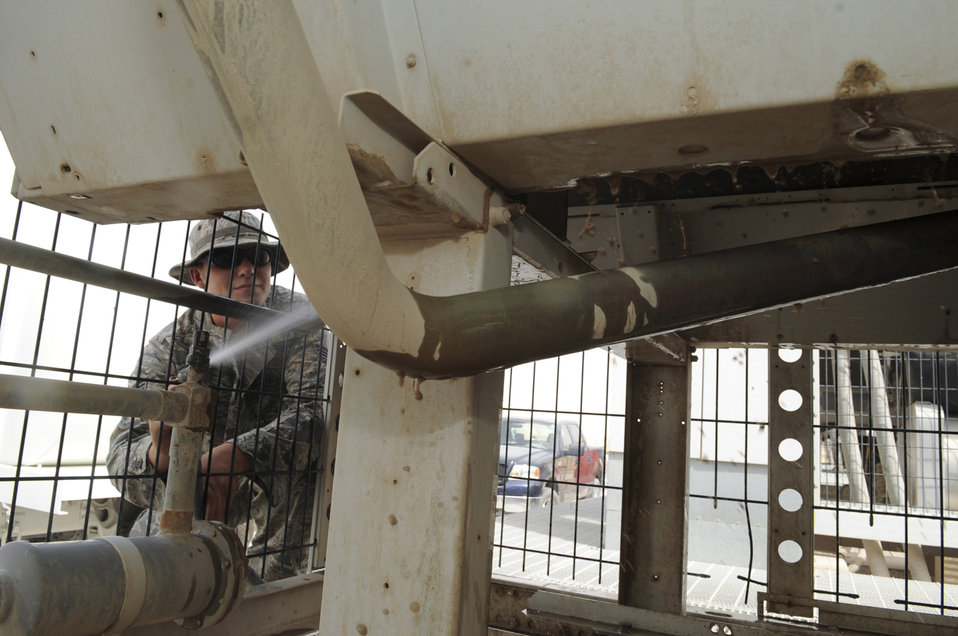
HVAC cooling them down

Senior Airman Domenic Trolla, 379th Expeditionary Civil Engineer Squadron heating, ventilation, air-conditioning and refrigeration technician, sprays built-up dirt off the air filters July 2 on a chiller that provides cool air to the Combined Air Operations Center at this air base in Southwest Asia. The chillers are cleaned weekly to ensure they operate properly. Airman Trolla is native of Ironwood, Mich., and is deployed from Luke Air Force Base, Ariz.